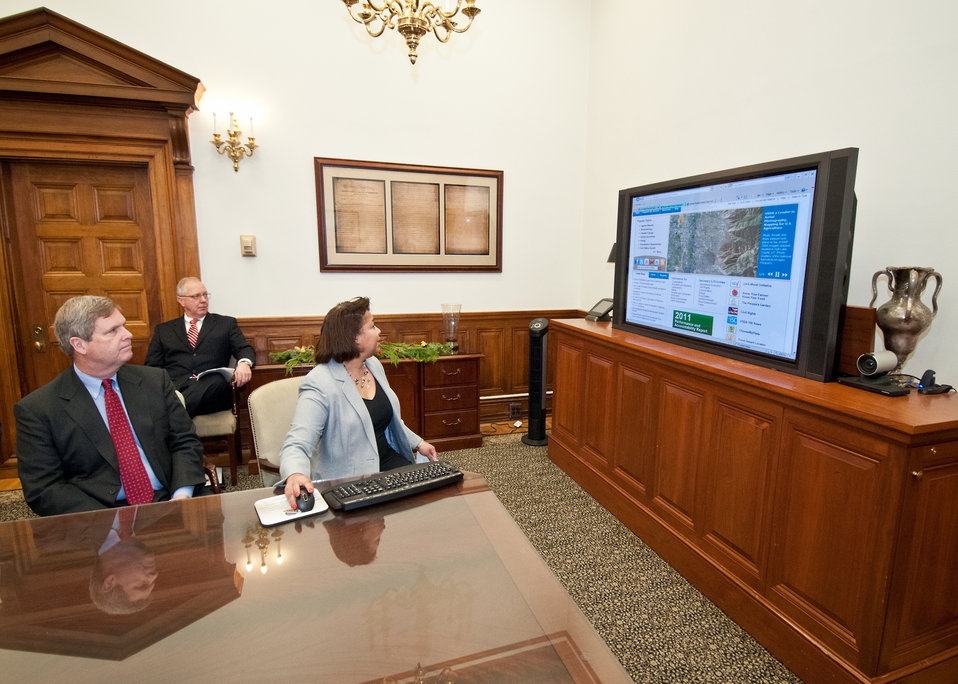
From left: Agriculture Secretary Tom Vilsack, Dr. Harry Baumes, Office of the Chief Economist and Jeanette Water, Rural Development preview the new United States Department of Agriculture Renewable Energy website with the USDA Renewable Energy Council on Tuesday, December 6, 2011 in Washington, D.C. USDA's Renewable Energy web site will allow access to web based tools for renewable energy. Included in the web site will be an: Energy Matrix, Energy Tool and Energy Investment Maps. The USDA Energy Matrix is a navigation tool to assist users in finding information on USDA renewable energy programs and USDA experts. USDA's energy related programs are large in scope, and extend among many USDA agencies and mission areas the Matrix will help to guide you. The Energy Tool will be used to identify “renewable energy opportunities” by providing stakeholders access to agro-, economic, socio-, and technical data and information resources that are relevant to the evaluation of potential opportunities. The Energy investment maps contain information regarding USDA programs that provide assistance to renewable energy and energy efficiency projects.